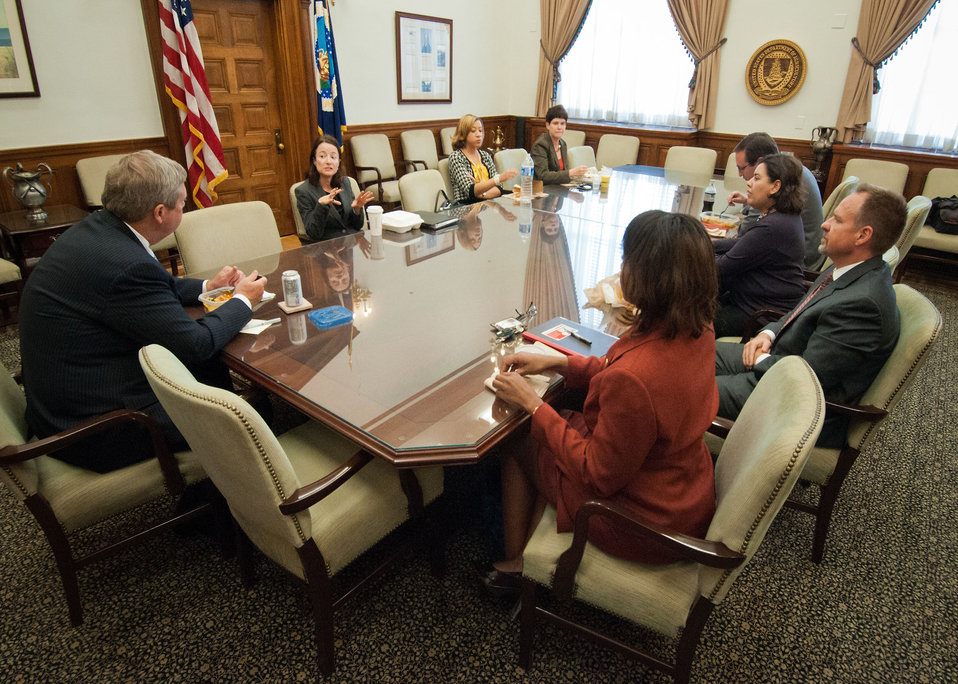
Agriculture Secretary Tom Vilsack meets with U.S. Department of Agriculture (USDA) employees for a Brown Bag lunch to gain information and knowledge to assist in the administration of the affairs and programs of the Department, and to thank the employees for their dedication and diligence in Washington, D.C. on Wednesday, Sept. 26, 2012. (L to R Agriculture Secretary Tom Vilsack, USDA Rural Development (RD) Rural Utilities Service (RUS) Deputy Administrator Jessica Zufolo, USDA Agriculture Research Service (ARS) Program Analyst Tracy Troutman, USDA Chief of Staff Krystal Hardin, USDA Scheduling Deputy Director Toby Osherson, USDA Rural Development (RD) Senior Advisor Sylvia Bolivar, USDA Forest Service Fire and Aviation Management Deputy Director Robert Baird, and USDA Chief Privacy Office Ravoyne Payton).